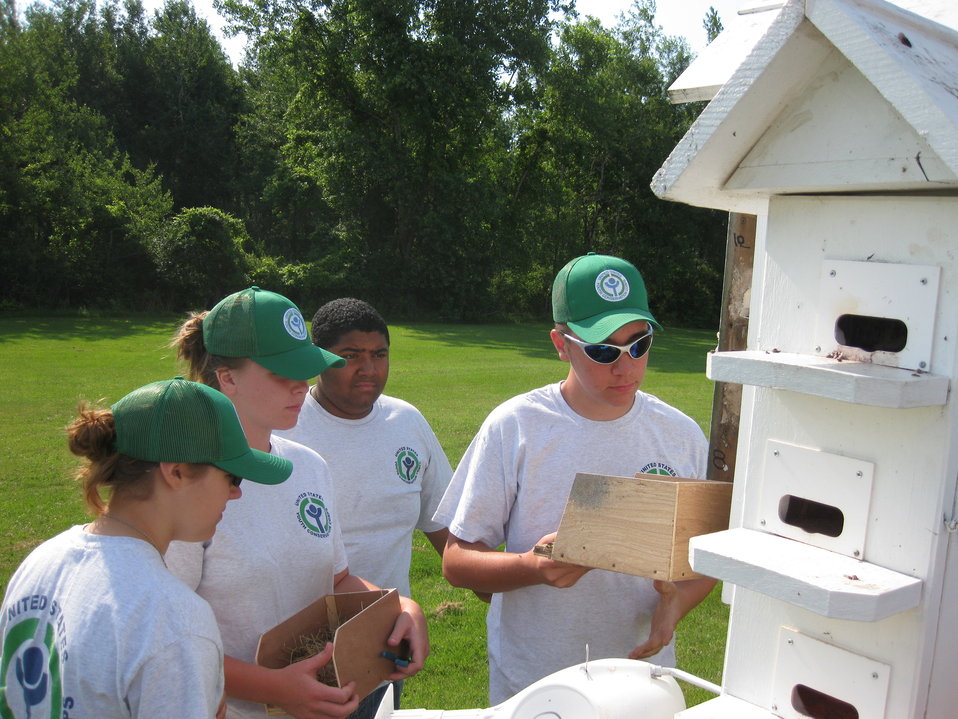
YCC crew helping to check purple martin houses

The YCC crew helps to check purple martin houses at Iroqouis National Wildlife Refuge.